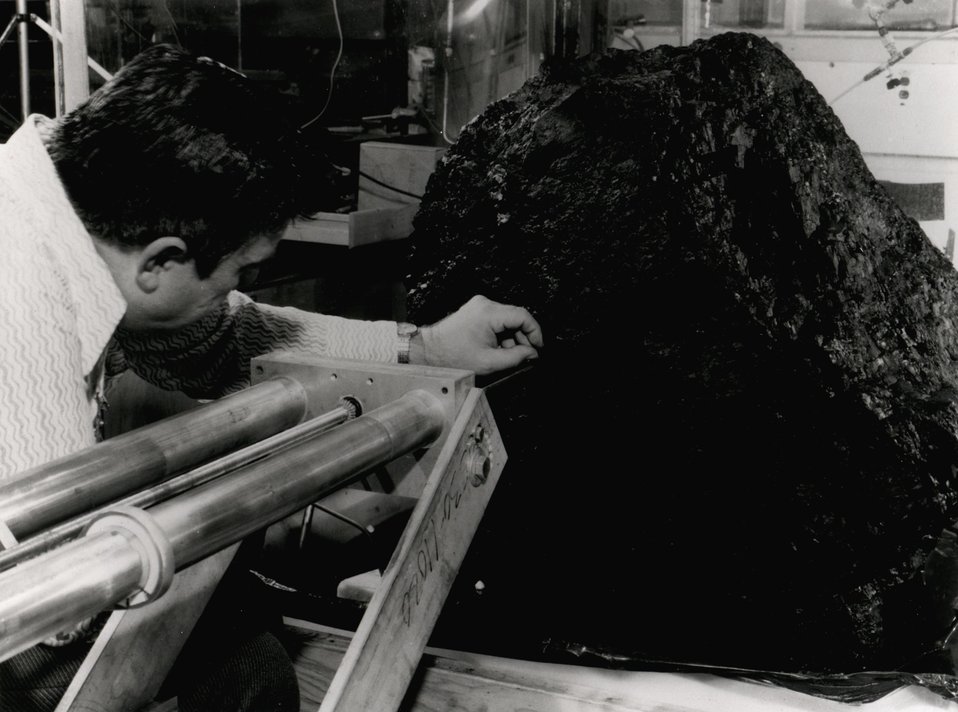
Coal is a porous material-- a fact that is of great importance in the effort of the Energy Research and Development Administration's (ERDA) Lawrence Livermore Laboratory to develop a new technology to gasify deep-lying coal in place at depths of 500 to 3000 feet. Circa 1975.